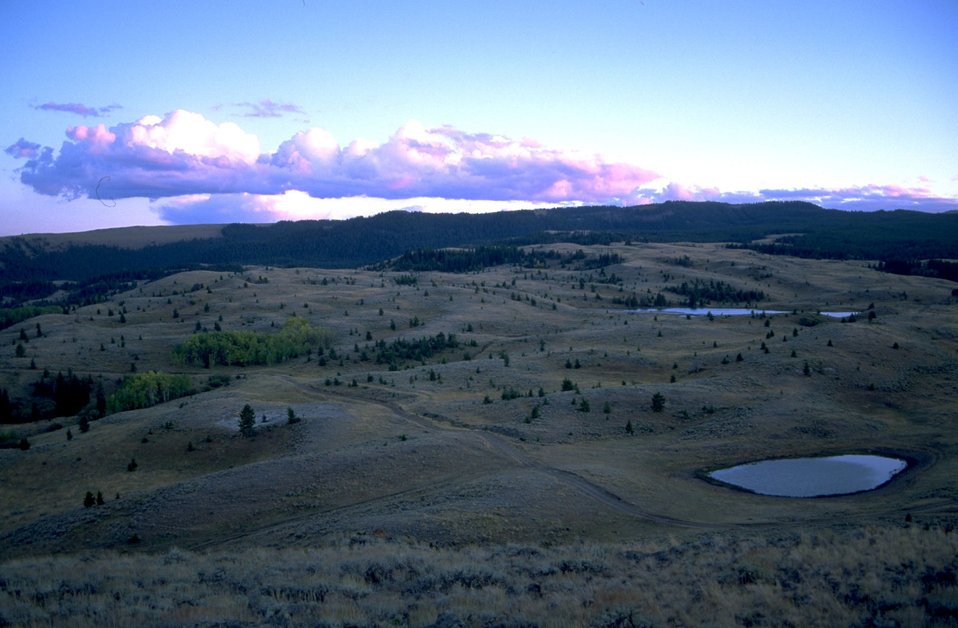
Looking down over lakes in the evening light